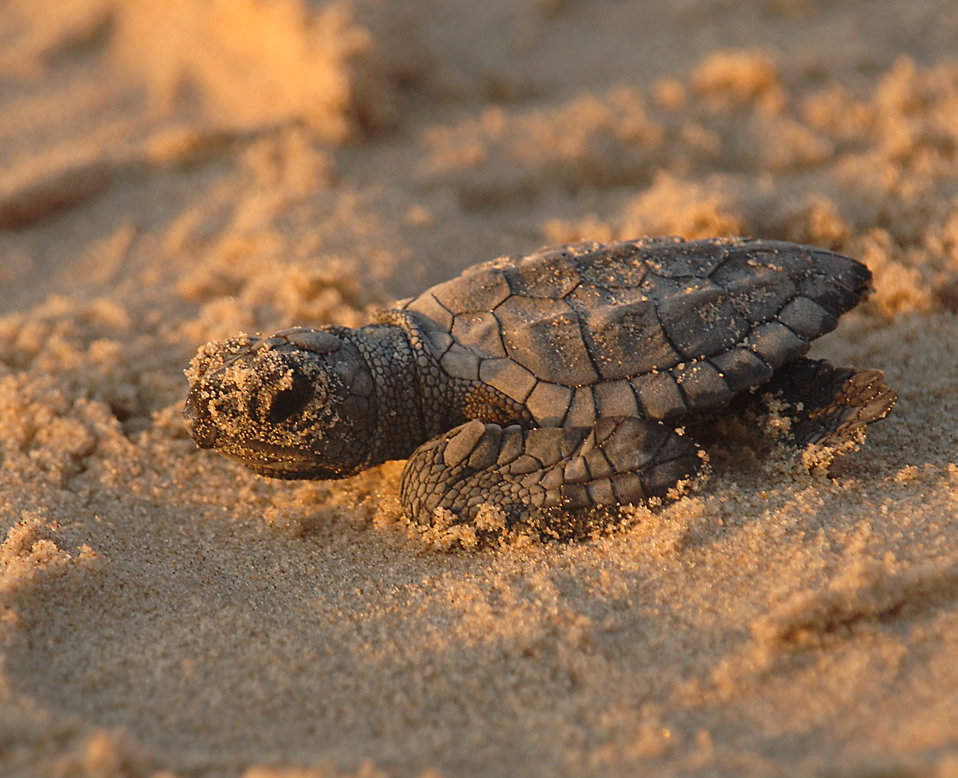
Turtle hatchling close-up, Texas